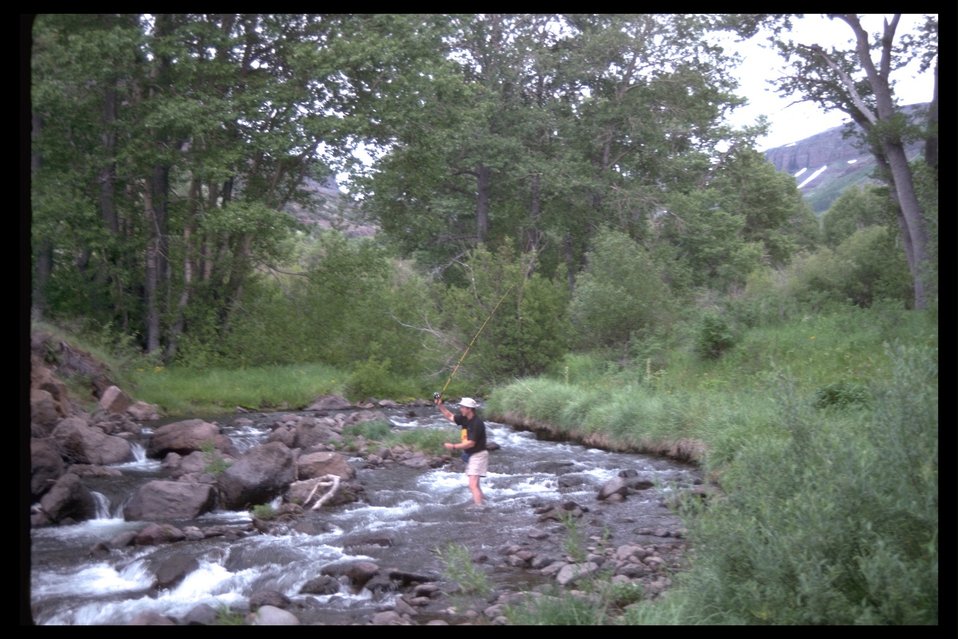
Dave Herman flyfishing on Little Blitzen River in the Little Blitzen Gorge WSA. (WSA 2-86F)